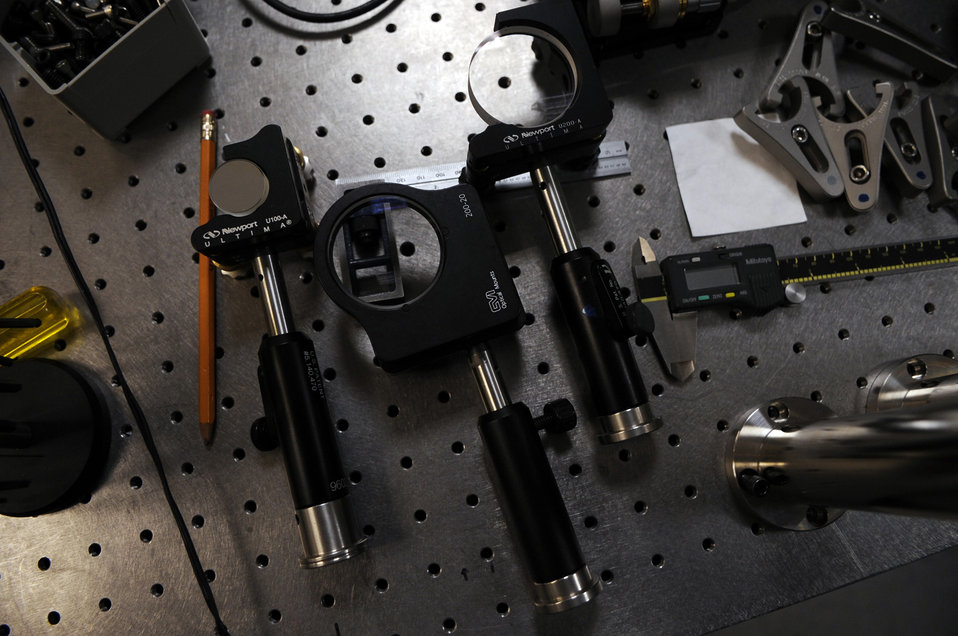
Academy researcher develops satellite imaging technology

Optical equipment sits on a working table Jan. 22 in the Laser and Optics Research Center at the U.S. Air Force Academy in Colorado.